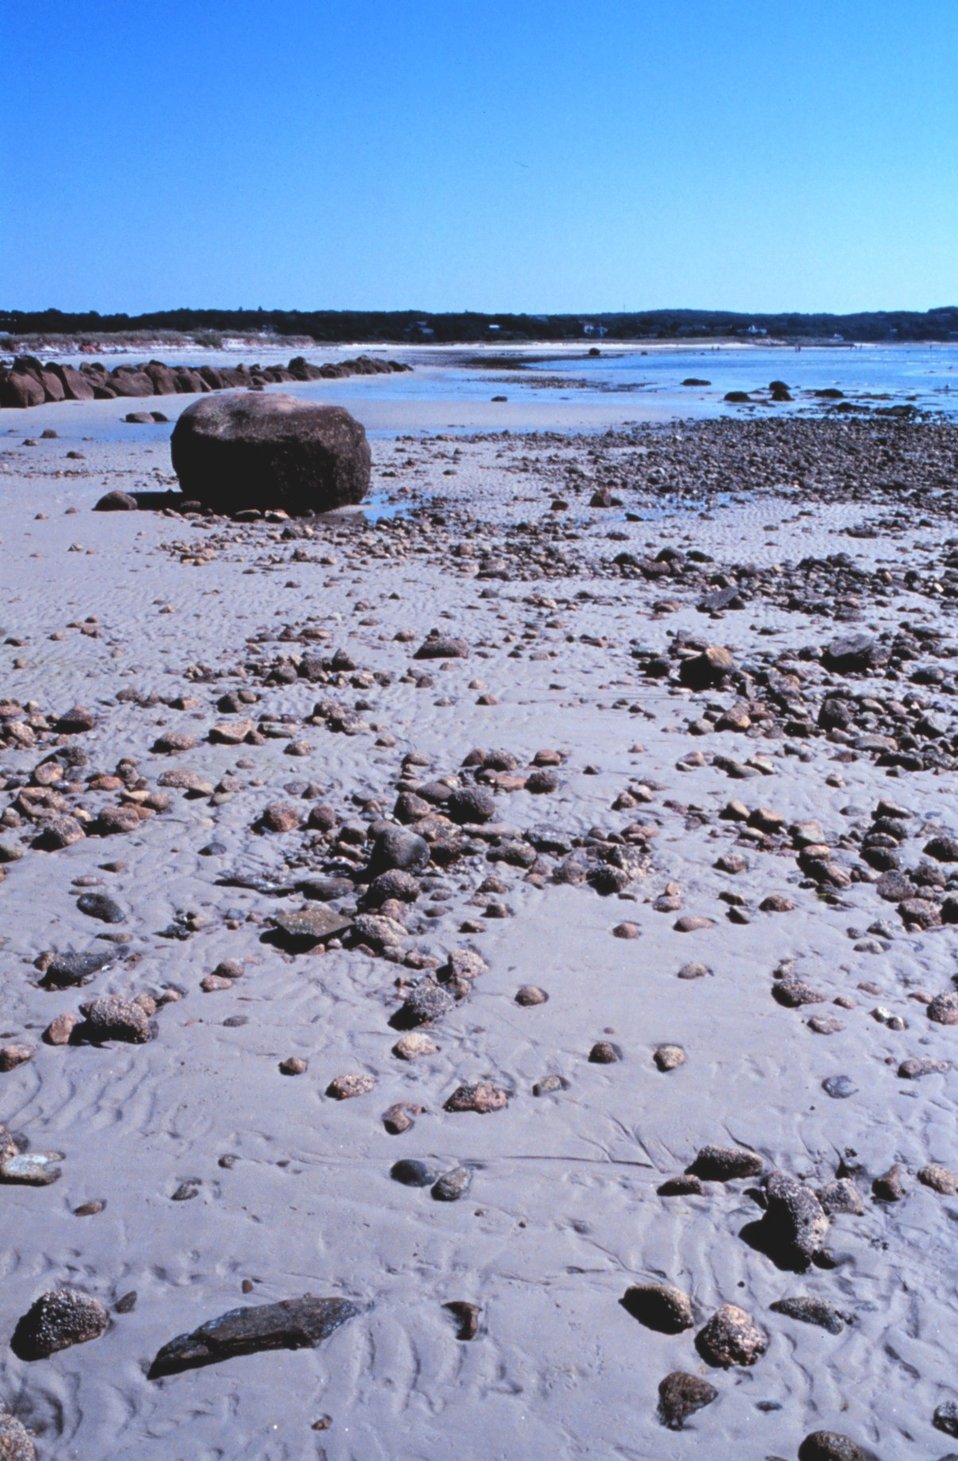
Black Beach, West Falmouth